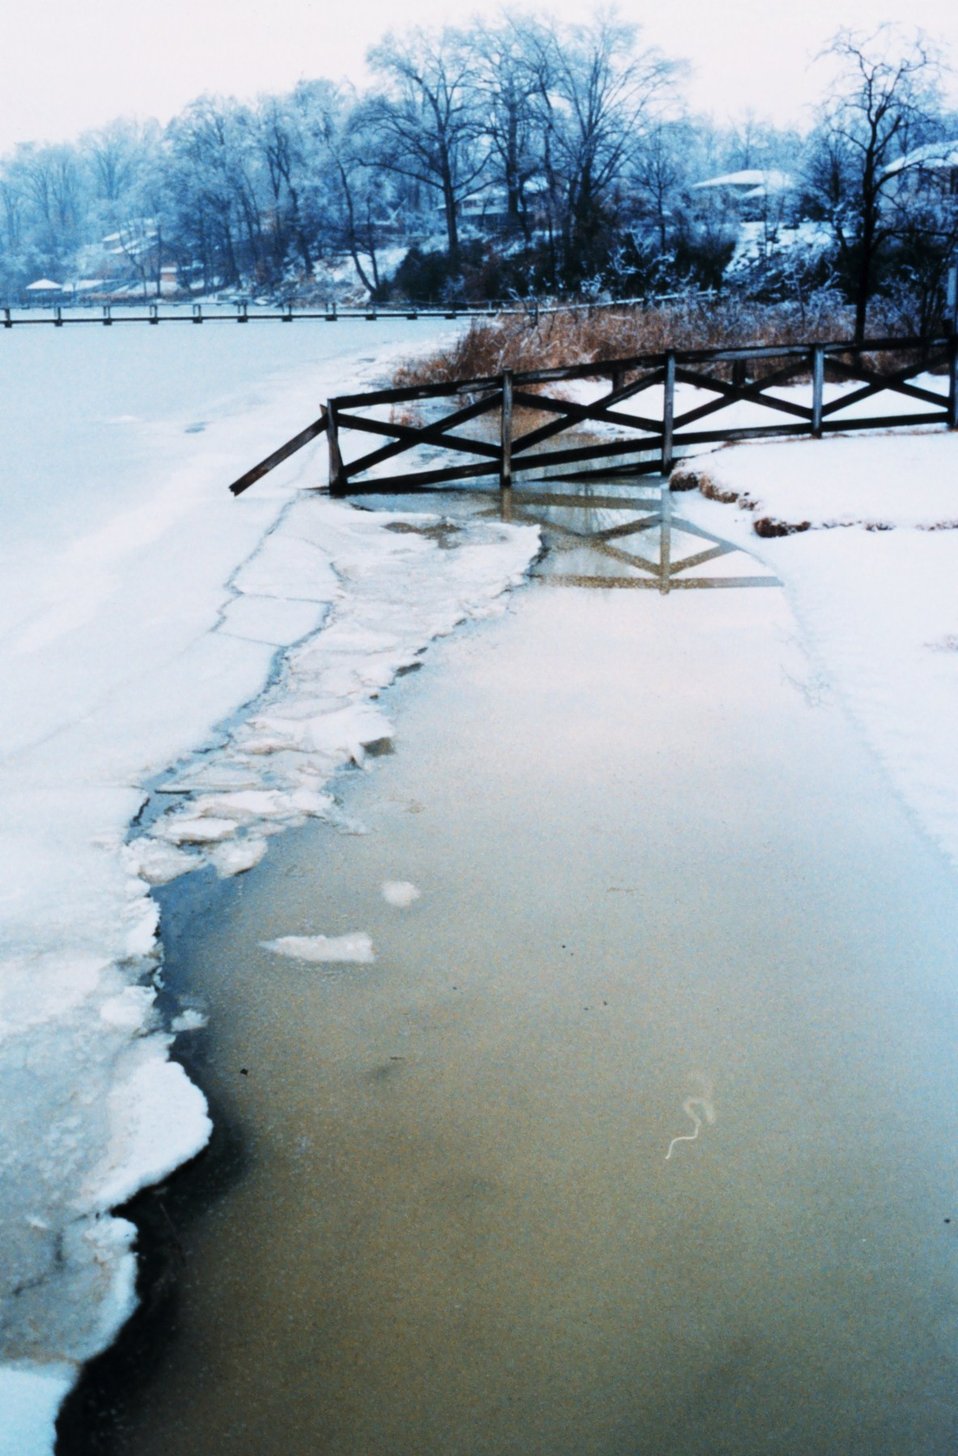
Open water between the high and low tide lines at Holland Cliffs Shores.